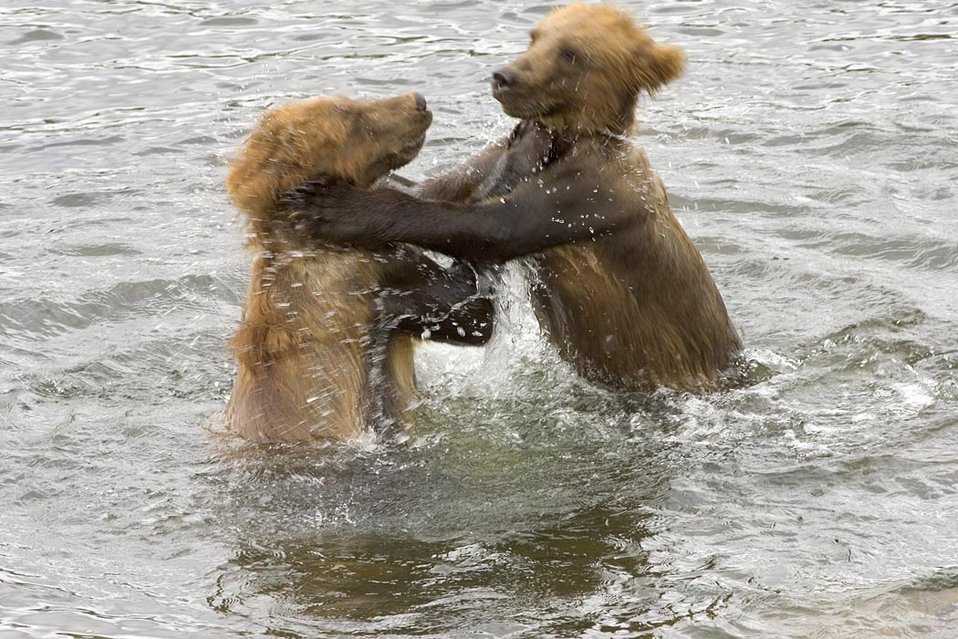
Brown bear cubs playing in water

This image taken at the Frazer Lake weir. Frazer Lake weir consists of a series of